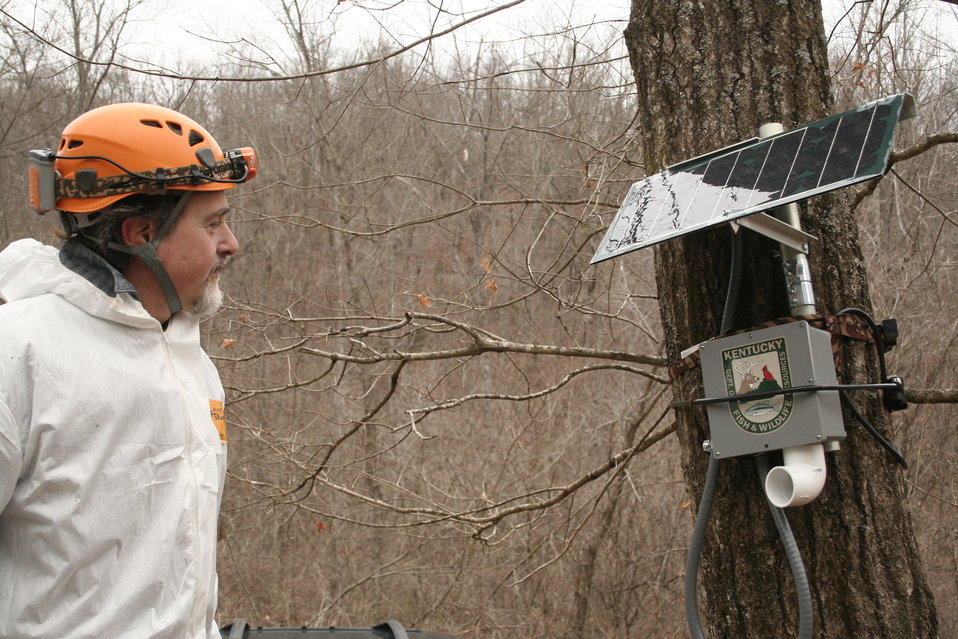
S.P.A.M. bat monitoring device

solar powered acoustic monitoring (S.P.A.M.) device used to monitor bats